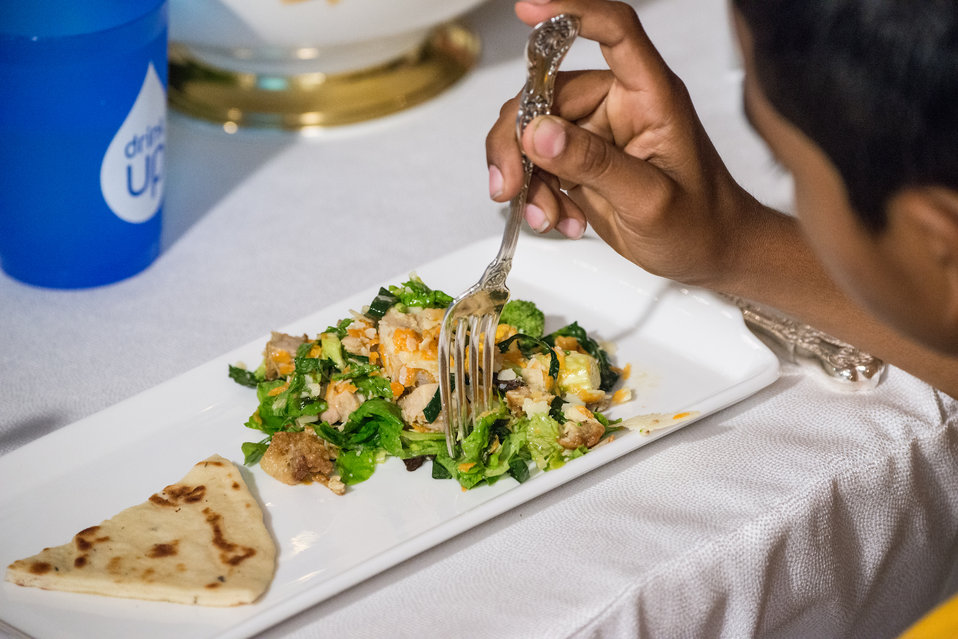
Washington, D.C. students from Cleveland Elementary School, Friendship Public Charter School, Kimball Elementary School, Bancroft Elementary School, and Harriet Tubman Elementary School have lunch in the State Dining Room of the White House in Washington, D.C. on Thursday, Jun. 12, 2014. The students, who helped plant the garden in the spring, made lunch from this year’s summer crop with the help of White House chefs and visiting school nutrition directors from Orlando, FL, Dallas, TX, and West Virginia.